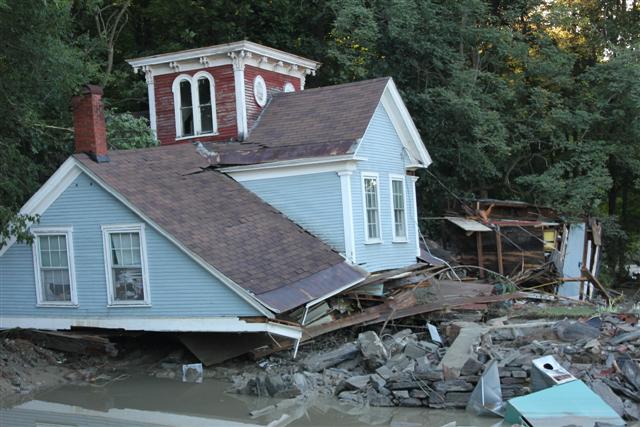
Damage after Hurricane Irene

Houses were severely damaged after Hurricane Irene came through Bethel, VT. on August 28, 2011.